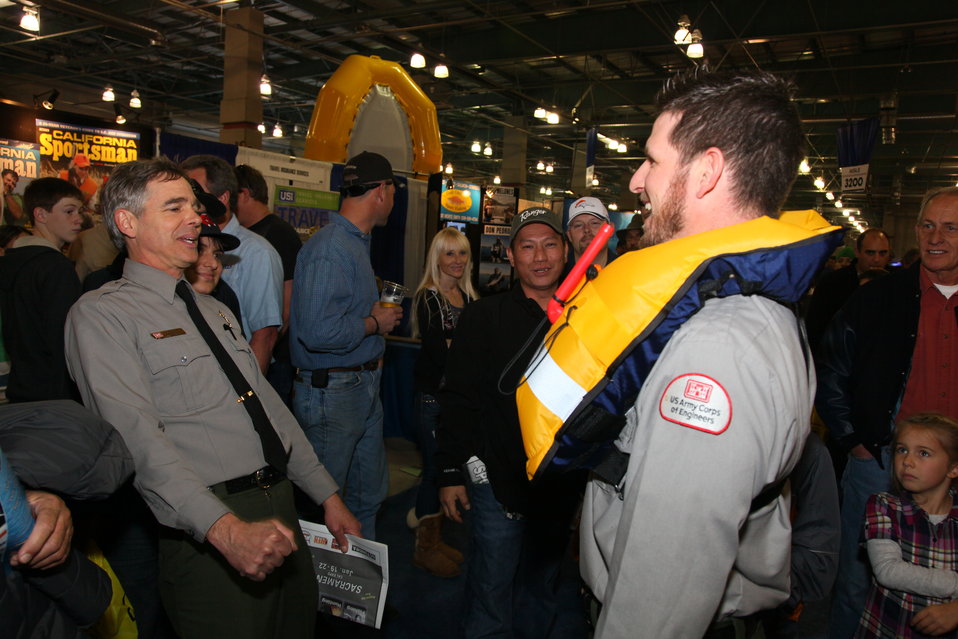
Corps park rangers promote water safety at the 2012 Sportsmen’s Expo

U.S. Army Corps of Engineers park rangers Tom Bookholtz (left) and Josh Jimerfield (right) demonstrate an inflatable life jacket and talk about water safety with visitors to the International Sportsmen’s Exposition in Sacramento, Calif., Jan. 20, 2012. Corps park rangers were on hand at the event to present and promote water safety tips and recreation opportunities at Corps parks.